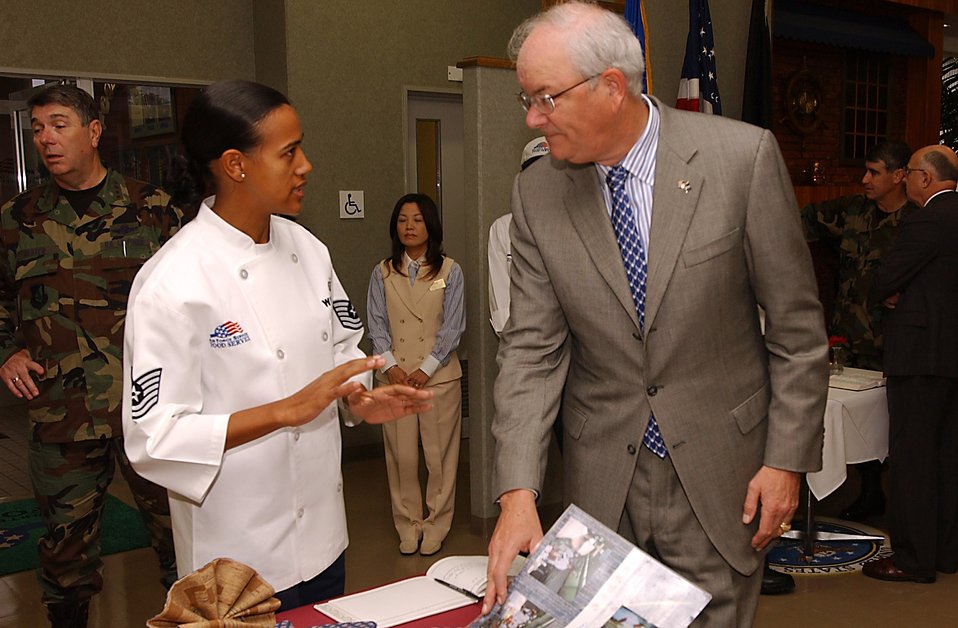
SECAF visits Kadena

Tech. Sgt. Ashley Williams explains the Marshal Dinning facility operations to Secretary of the Air Force Michael W. Wynne during his base tour of Kadena Air Base, Japan, Thursday, March 23, 2006.